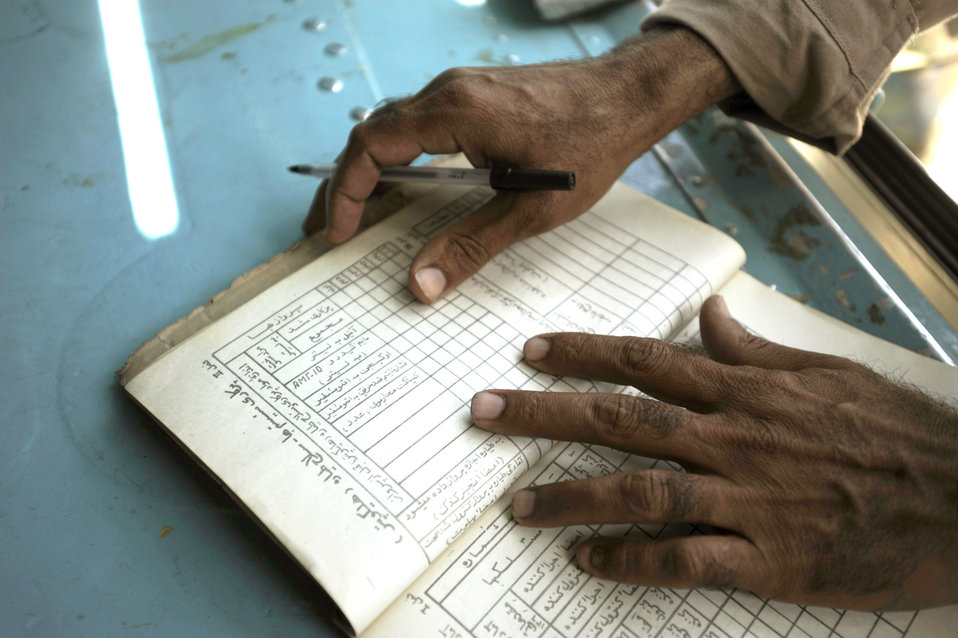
Airman leads joint Mi-35 attack helicopter adviser team for Afghan Air Corps

An Afghan National Army Air Corps soldier annotates the pre-flight inspection findings on a Mi-35 Hind E helicopter prior to take off for a live-fire mission May 11, 2010, at Kabul International Airport, Afghanistan.